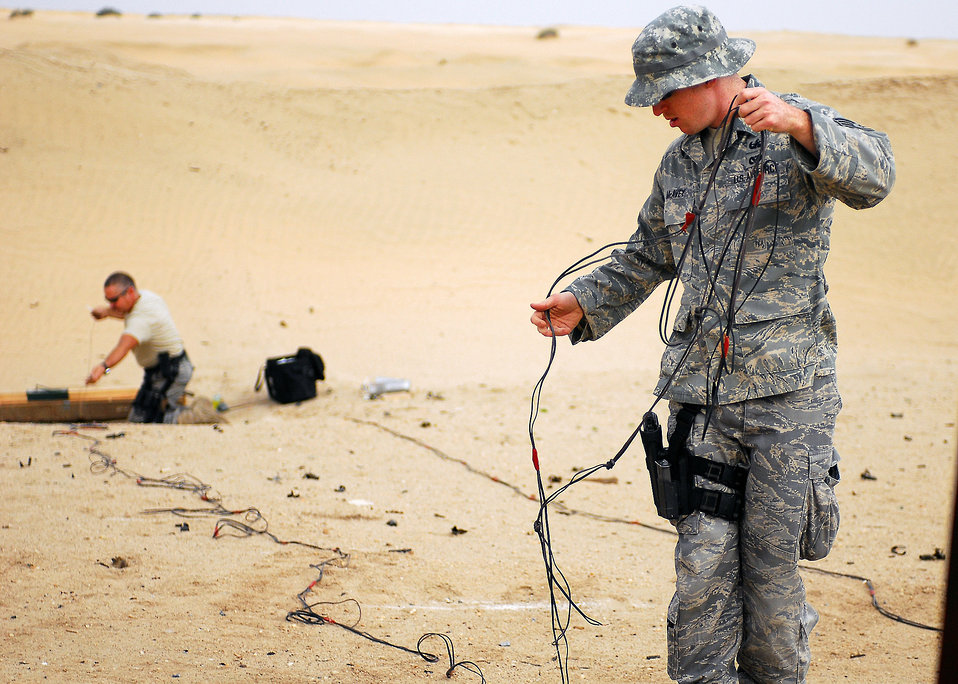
Explosive pros clear hazards, keep locals safe

Staff Sgt. David Barrett (rear) and Staff Sgt. Brenden McAvey set up a detonation site outside the wire at an air base in Southwest Asia. Airmen in the 386th Expeditionary Civil Engineer Squadron Explosive Ordnance Disposal Flight have safely cleared almost 1,000 unexploded ordnance devices during their six-month deployment here. Sergeants Barrett and McAvey are 386th ECS Explosive Ordnance Disposal Flight members.